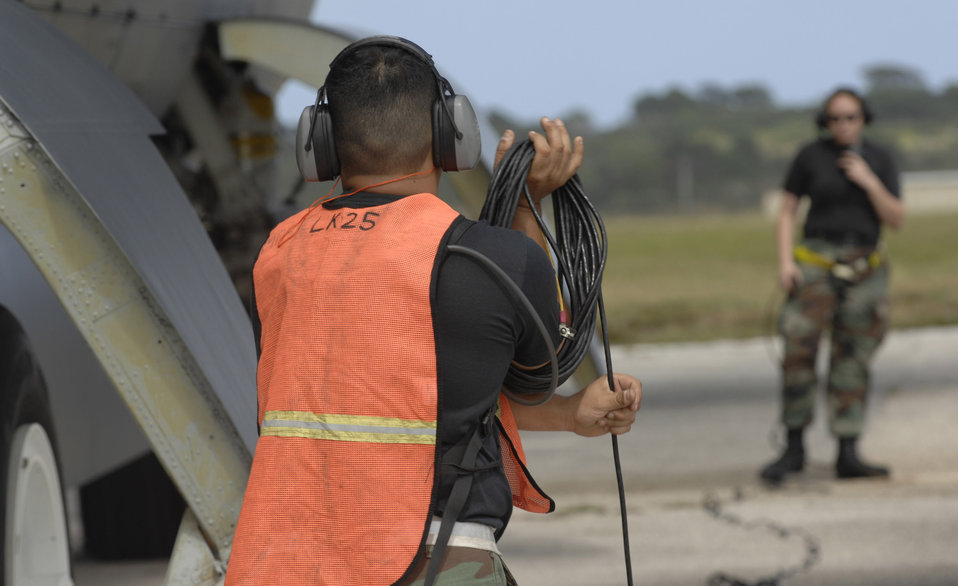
Tech. Sgt. Carlos Sanchez wraps up a communication cord Dec. 30, while Airman 1st Class Caroline Kraus checks in with aircrew during a B-52 Stratofortress launch at Andersen Air Force Base, Guam. Both are assigned to the 36th Expeditionary Aircraft Maintenance Squadron at Andersen and are deployed from Minot AFB, N.D. The bomber's participation in constant training helps emphasize the U.S. bomber presence, demonstrating U.S. commitment to the Pacific region.